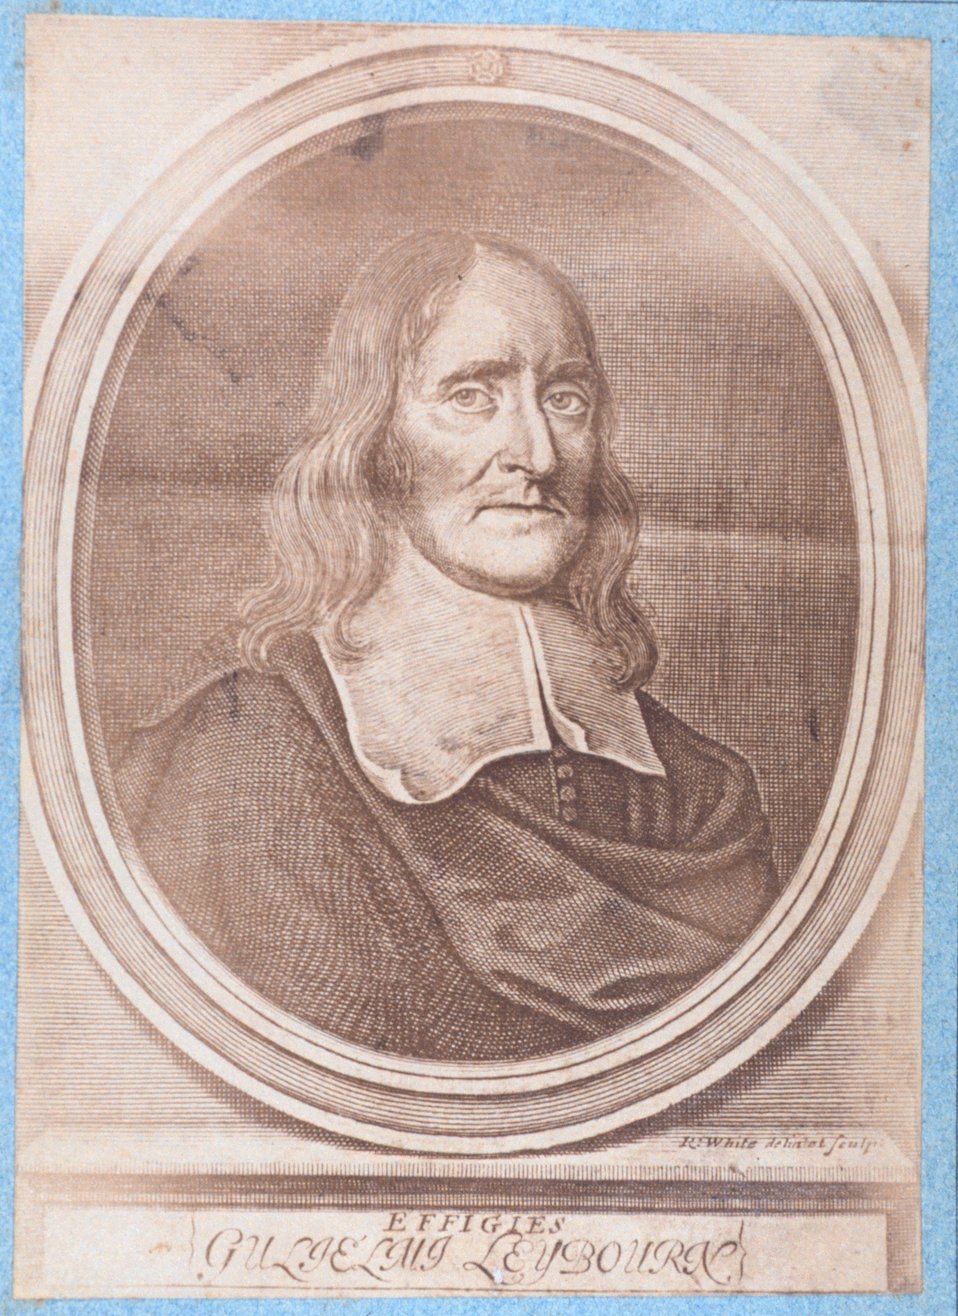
Image of William Leybourn, 1626-1716. In: 'La Science de l'arpenteur : dans toute son etendue', by Dupain de Montesson, 1775. Library Call Number TA544 .S25 1775